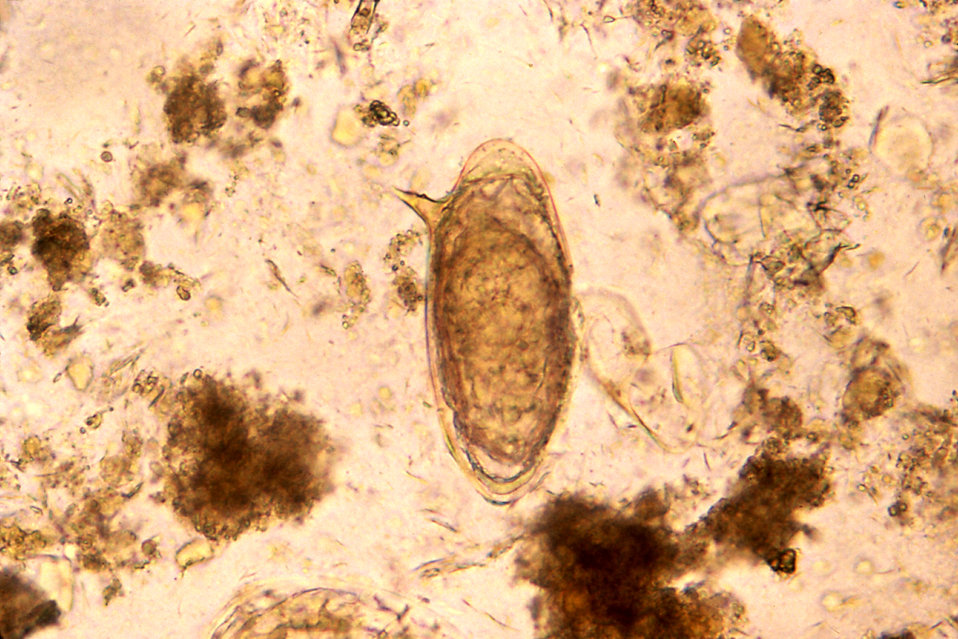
This micrograph reveals an egg from a Schistosoma mansoni trematode, which is dead, but shows a good spine.